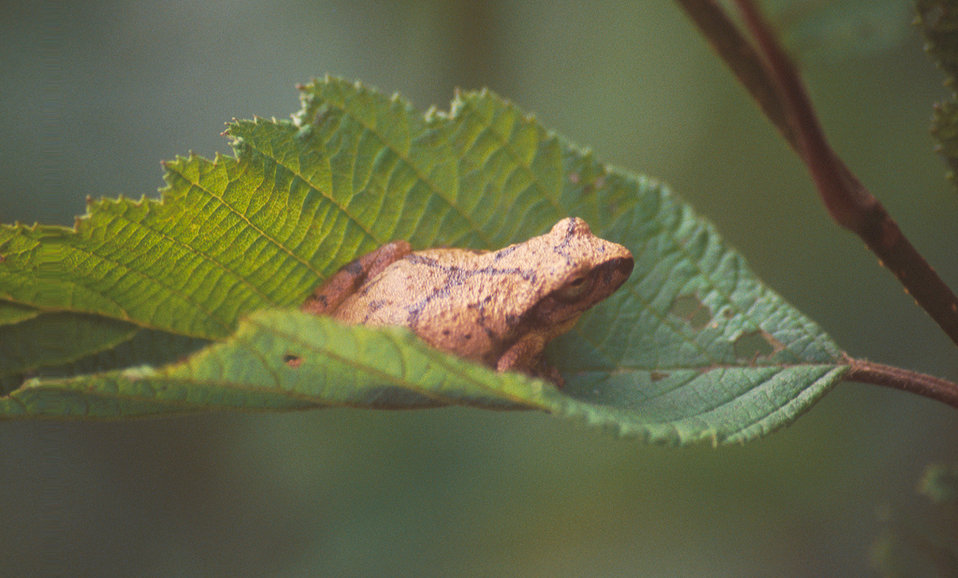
Spring Peeper on Alder Leaf

Nestled on an alder leaf, this spring peeper will add its voice to a chorus of croakers as the season arrives.